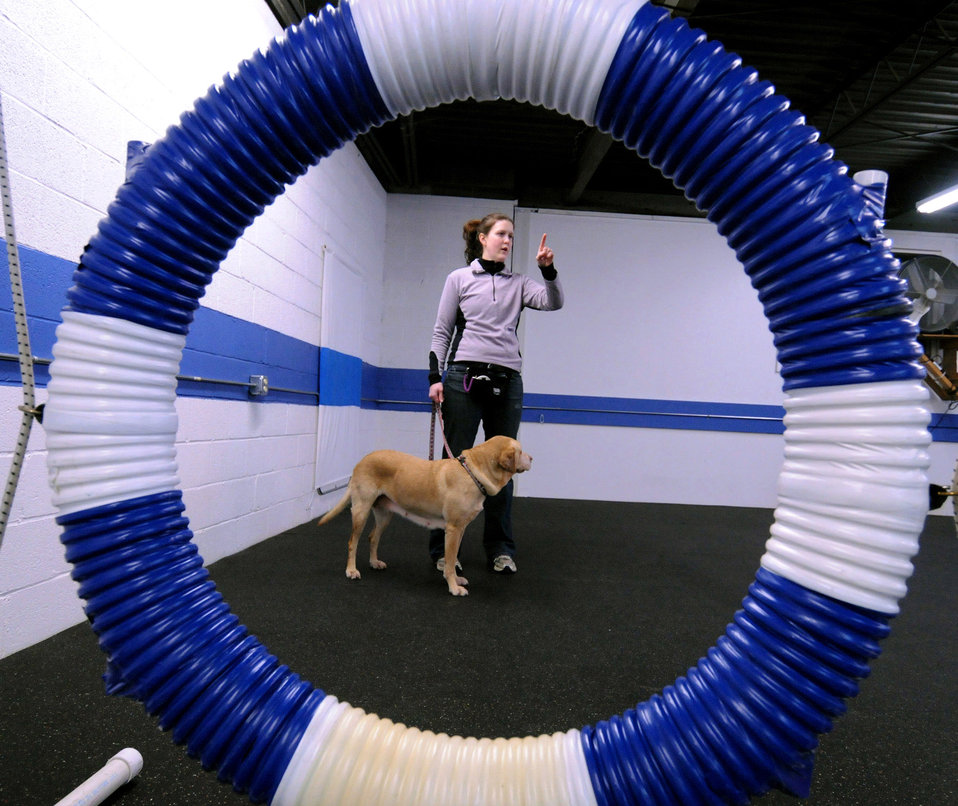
Rags to Riches in the American Heartland

First Lt. Heather Greatting scouts out an obstacle course during agility training Feb. 11 with Zoey, her 9-year-old Labrador retriever. The lieutenant is a space intelligence surveillance and reconnaissance systems employment analyst with the National Air and Space Intelligence Center at Wright-Patterson Air Force Base, Ohio.